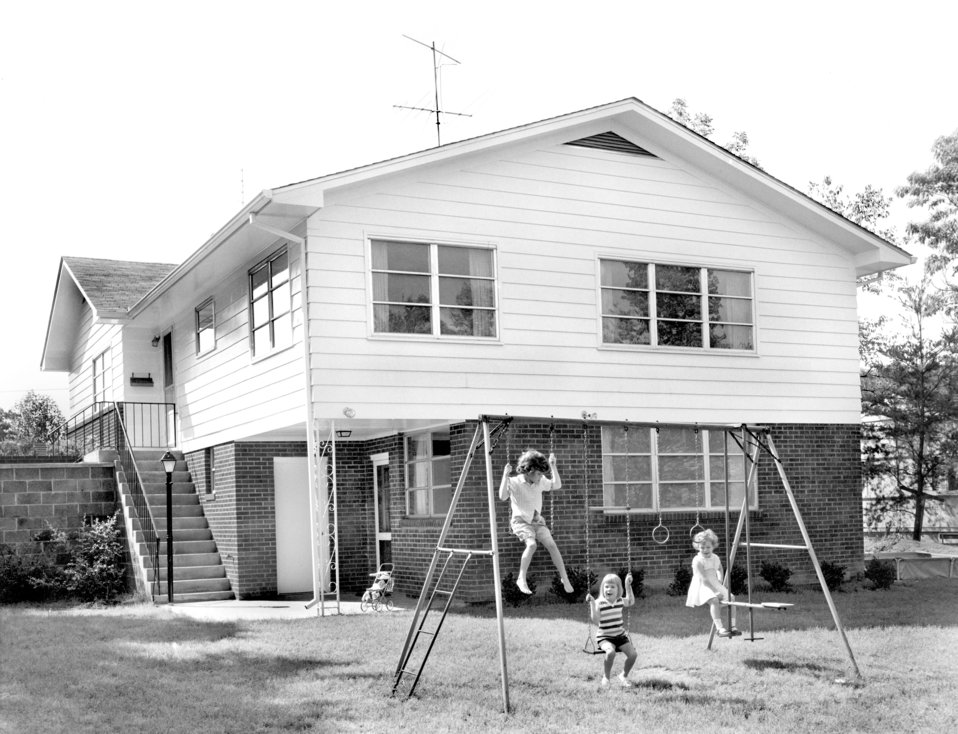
Type A House Remodeled Outer Dr. 1957 Oak Ridge

57-1415 DOE photo E.D. Mitchell 10-10-1957 Oak Ridge Tennessee